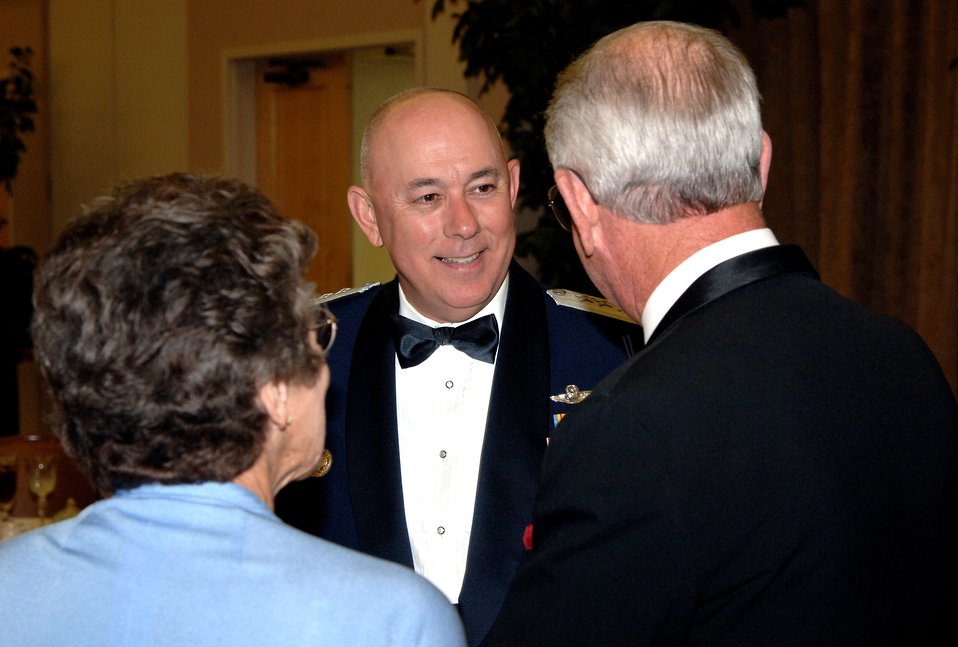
General tributes Air Force Villages

Air Force Chief of Staff General T. Michael Moseley talks with guests before dinner at the Air Force Villages dinner Oct. 20, 2006 at Lackland Air Force Base, Texas. The Villages offer premier active living communities for retired and honorably seperated officers and their spouses, widows and widowers over the age of 62.